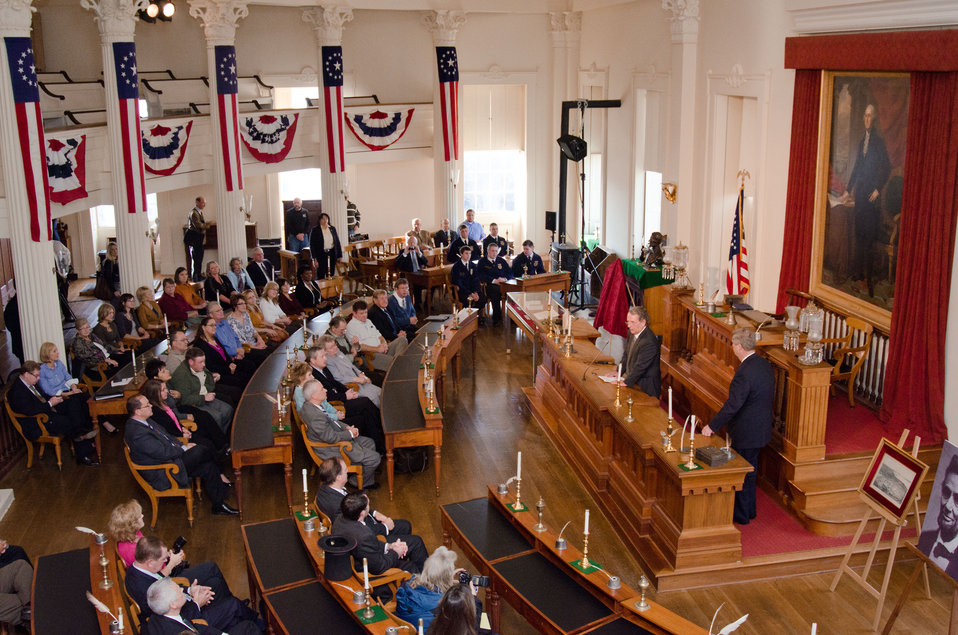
Illinois Department of Agriculture Director Jim Larkin makes opening remarks and introduced Agriculture Secretary Tom Vilsack during the unveiling of the 150th Anniversary graphic announcement at the Old State Capitol in Springfield, IL, to commemorate the creation of the U.S. Department of Agriculture on Wednesday, November 2, 2011.